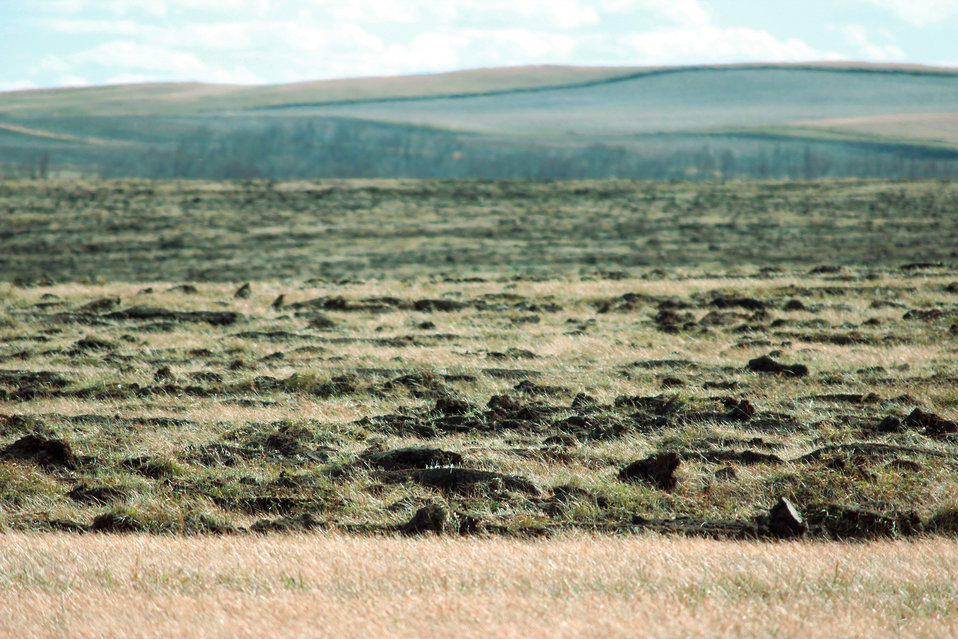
Yesterday's Prairie

This freshly-turned grass in Dickey County, North Dakota will likely be seeded to row crops this year.